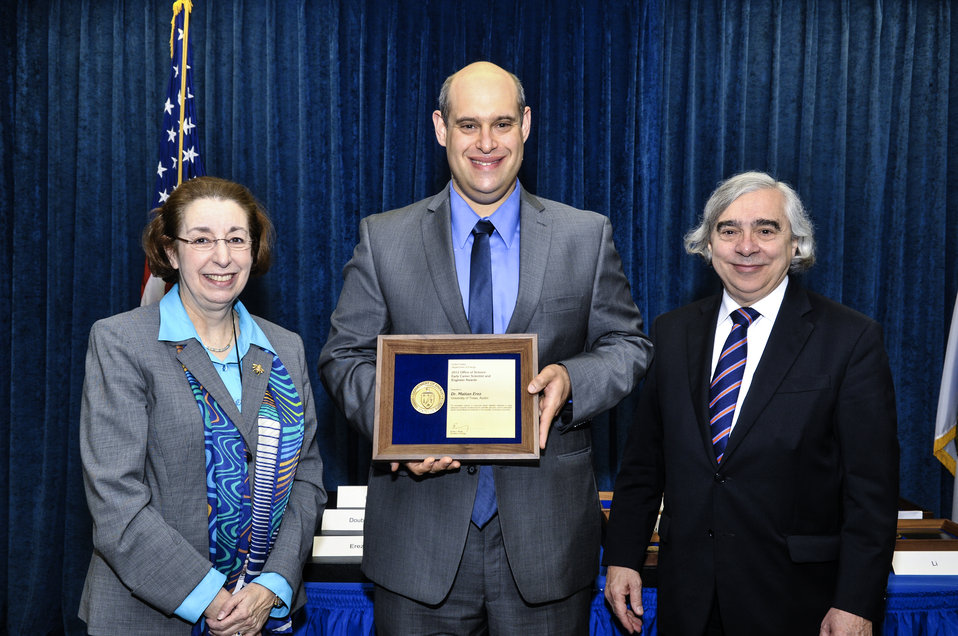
PECASE awards: DOE Secretary E. Moniz with DOE Office of Science Acting Director Pat Dehmer, PECASE Awardee Mattan Erez on April 14, 2014